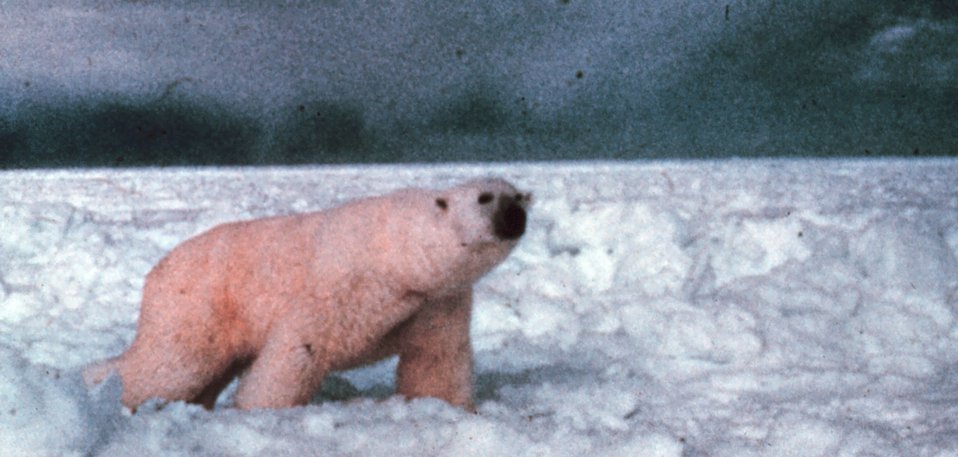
Polar bear - Ursus maritimus - on the ice in the Beaufort Sea.